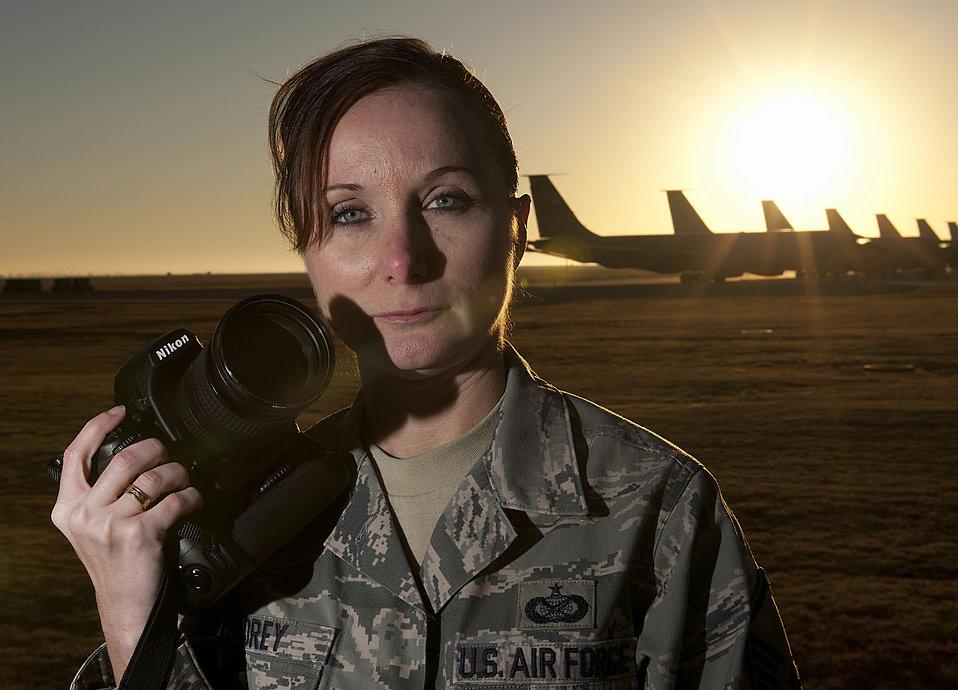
Through her lense

Master Sgt. Rebecca Corey holds her most important tool, the camera, at the flightline on Altus Air Force Base, Okla., Dec. 6, 20120. After her 2009 deployment to Ghazni province, Afghanistan, as a combat photographer, Corey struggled with life-altering post-traumatic stress disorder. Today, she is the NCO in charge at the 97th Air Mobility Wing.